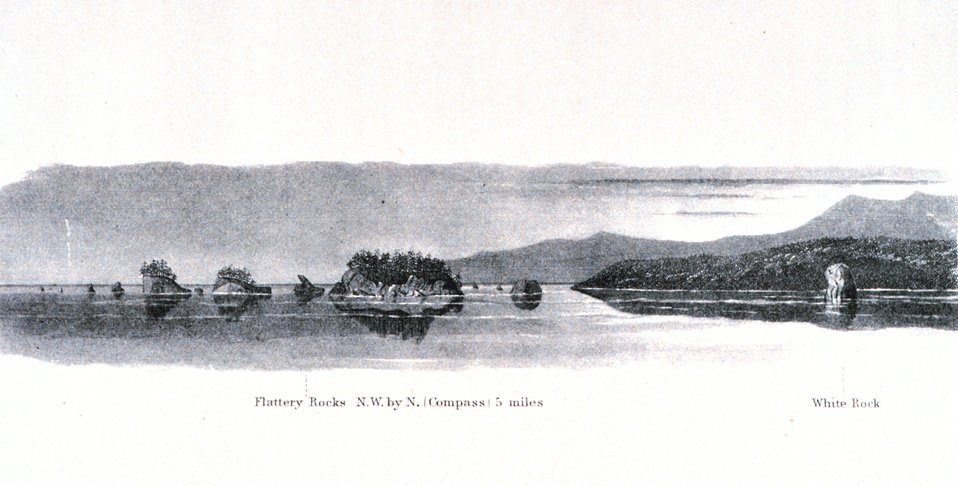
Flattery Rocks, approximately 12 nautical miles south of Cape Flattery. In: Pacific Coast. Coast Pilot of California, Oregon, and Washington Territory . By George Davidson, 1869. P. 177. Library Call Number VK947.D4 1869.